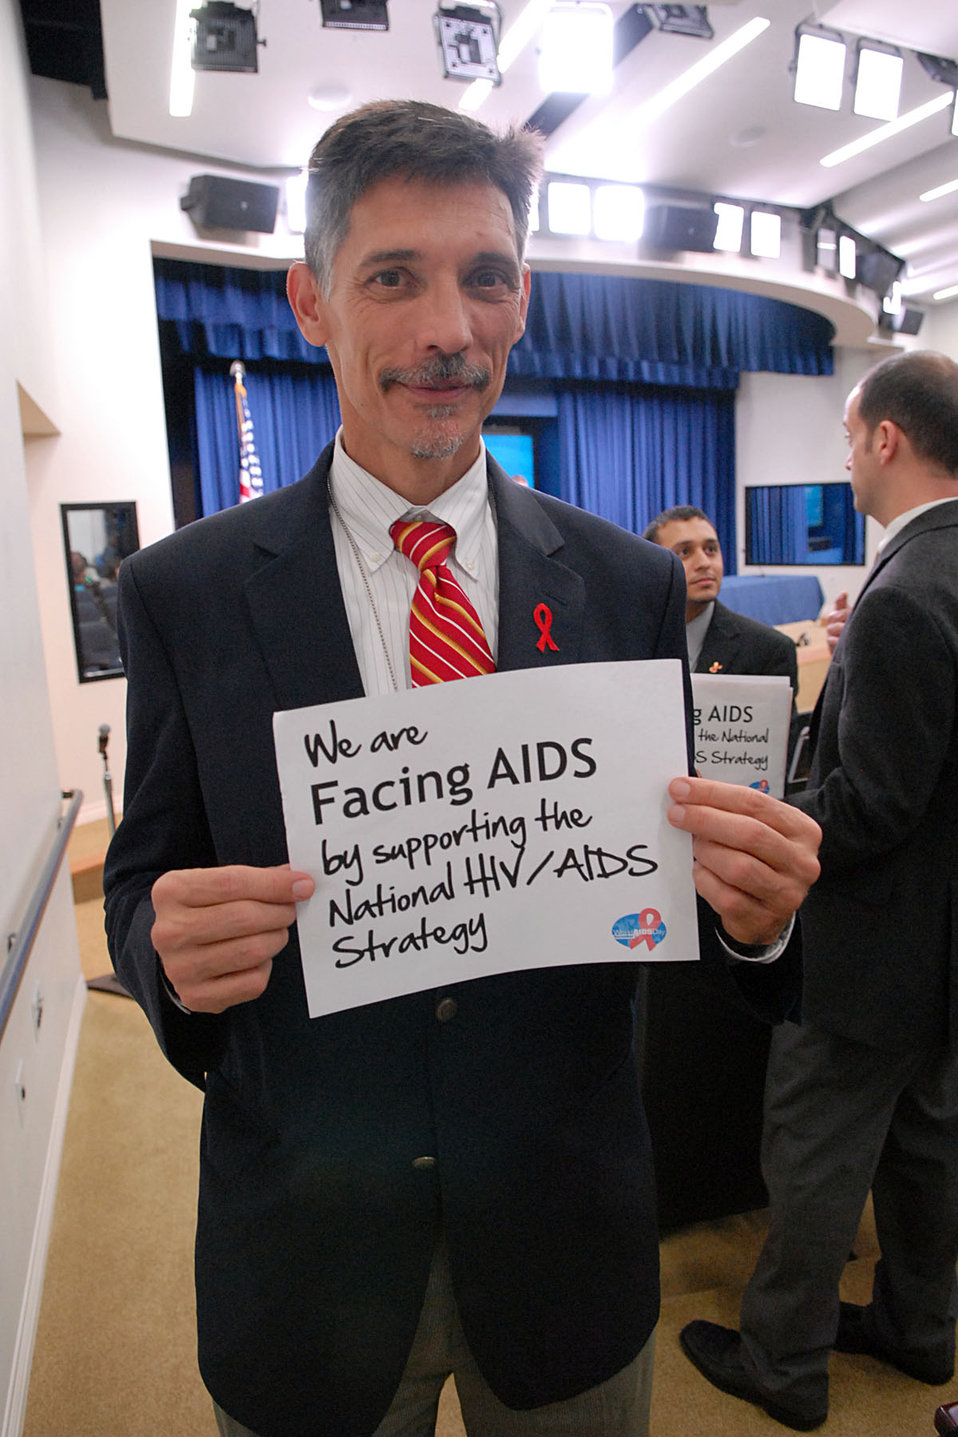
We are Facing AIDS by supporting the National HIV/AIDS Strategy